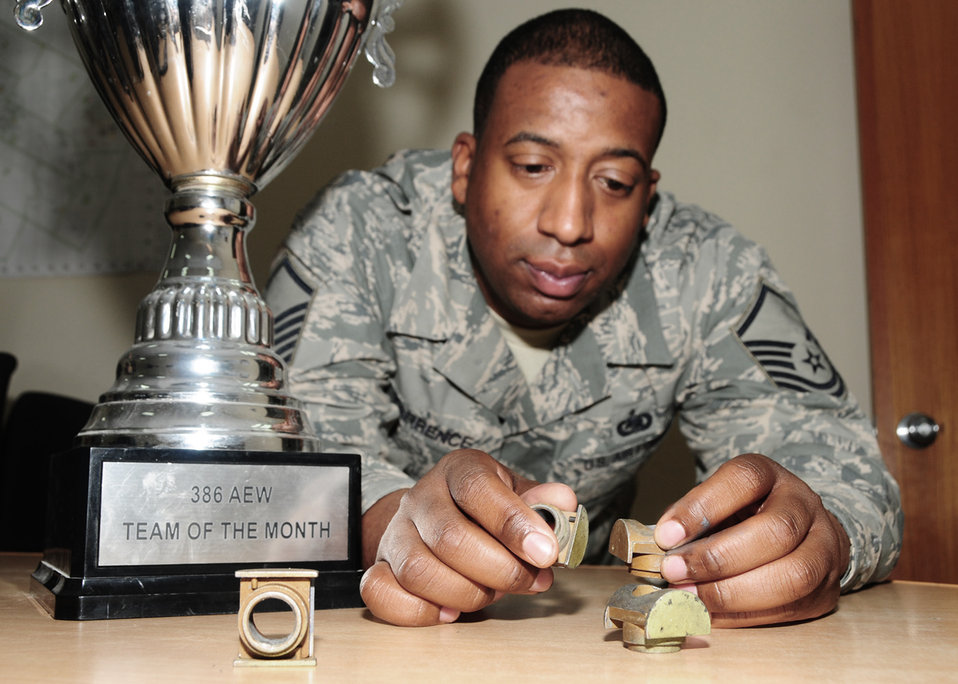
Barrel nut team gets C-130s back in the air

Master Sgt. Richard Tarrence poses with a wing-joint barrel nut April 22 at an air base in Southwest Asia. Sergeant Tarrence was part of a 30-person team assigned to inspect C-130 Hercules for defective barrel nuts and replace them without sacrificing mission effectiveness. The team was named the wng's team of the month for March. The defective barrel nuts removed from the C-130s are now in the team's trophy room.